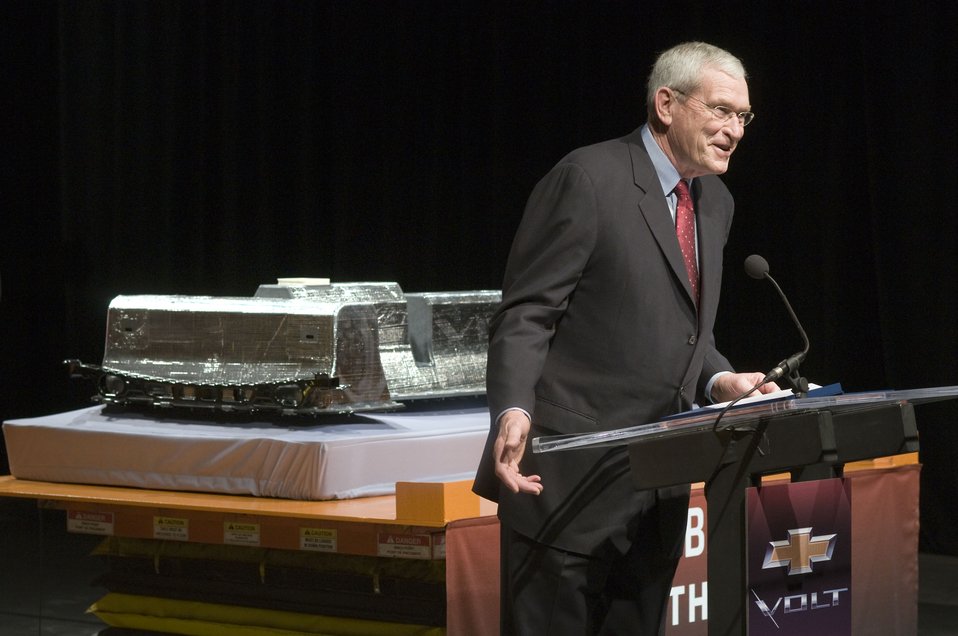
ChevyVoltFirstBattery02

General Motors Chairman and CEO Ed Whitacre addresses the gathering after the first Chevrolet Volt battery came off the line at the GM Brownstown Battery plant in Brownstown Township, Michigan Thursday, January 7, 2010. The facility is the first lithium ion battery pack manufacturing plant in the U.S. operated by a major automaker.